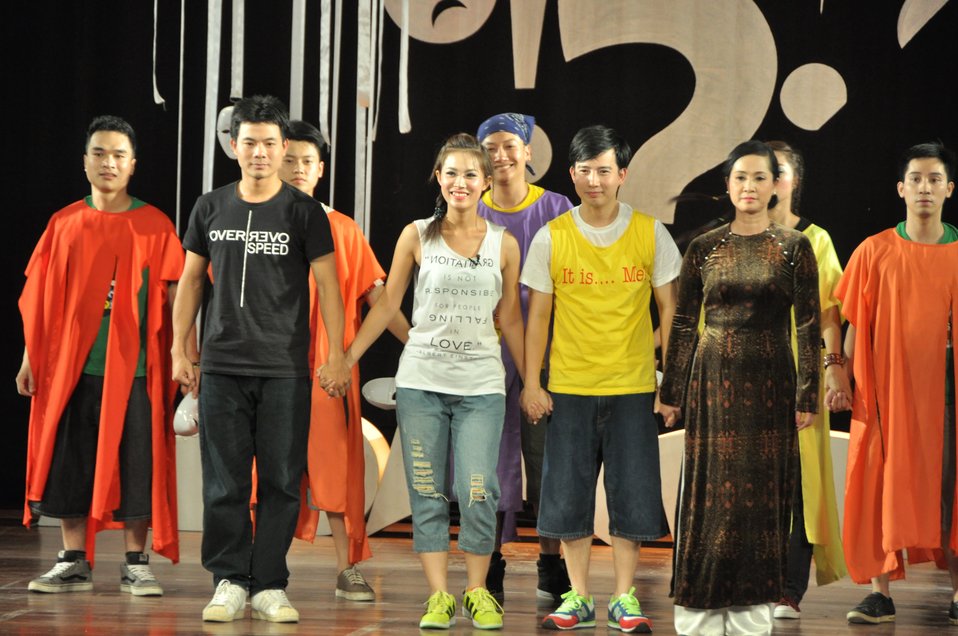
PEPFAR Musical Questions and Exclamations